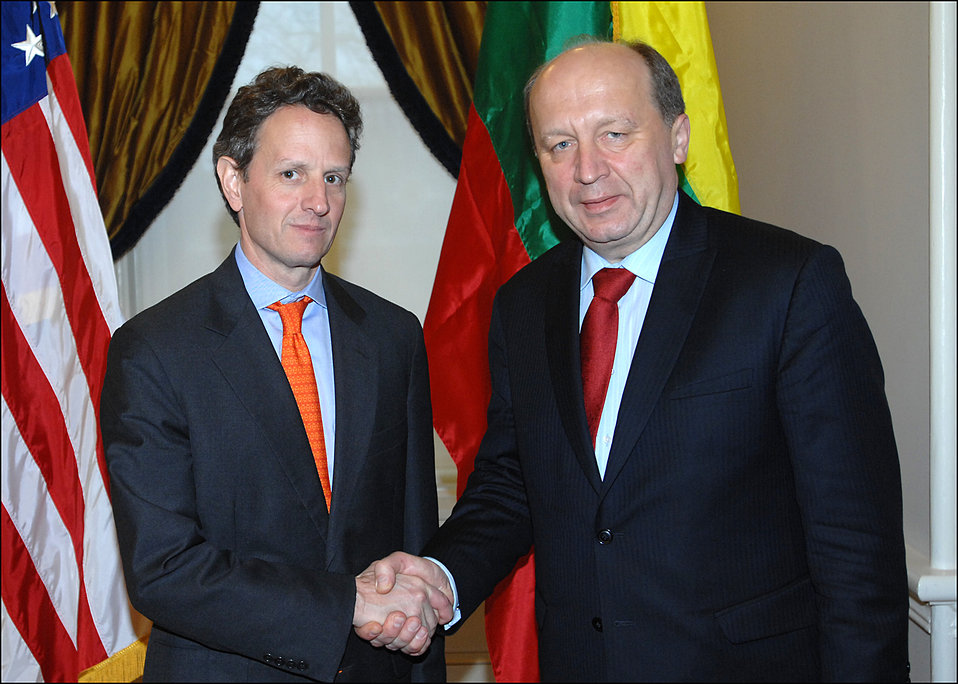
Lithuanian Prime Minister Andrius Kubilius

On February 4, 2010, Secretary Geithner met with Lithuanian Prime Minister Andrius Kubilius at Treasury.